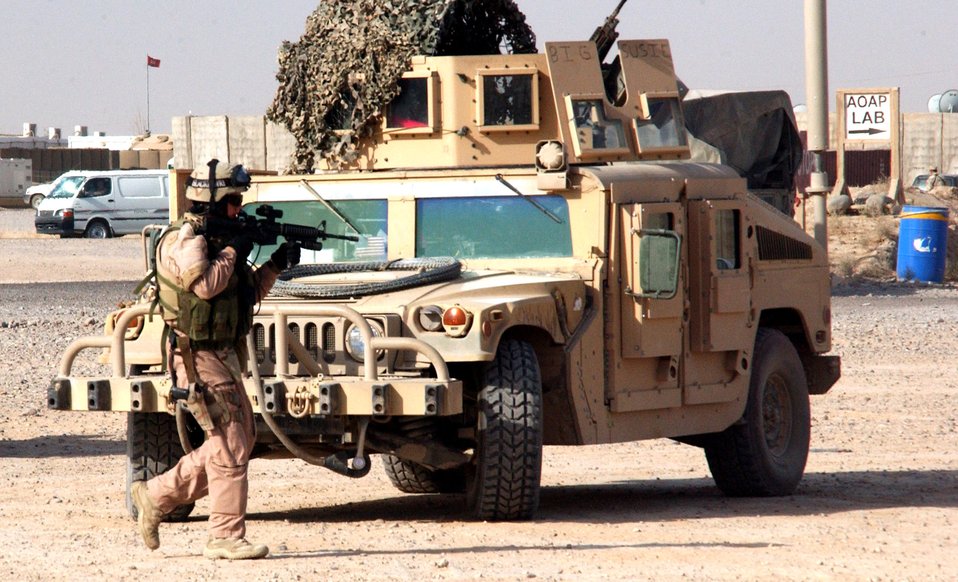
Airmen play key role in developing Iraqi police

Staff Sgt. Aaron Downing secures the area around a Humvee during